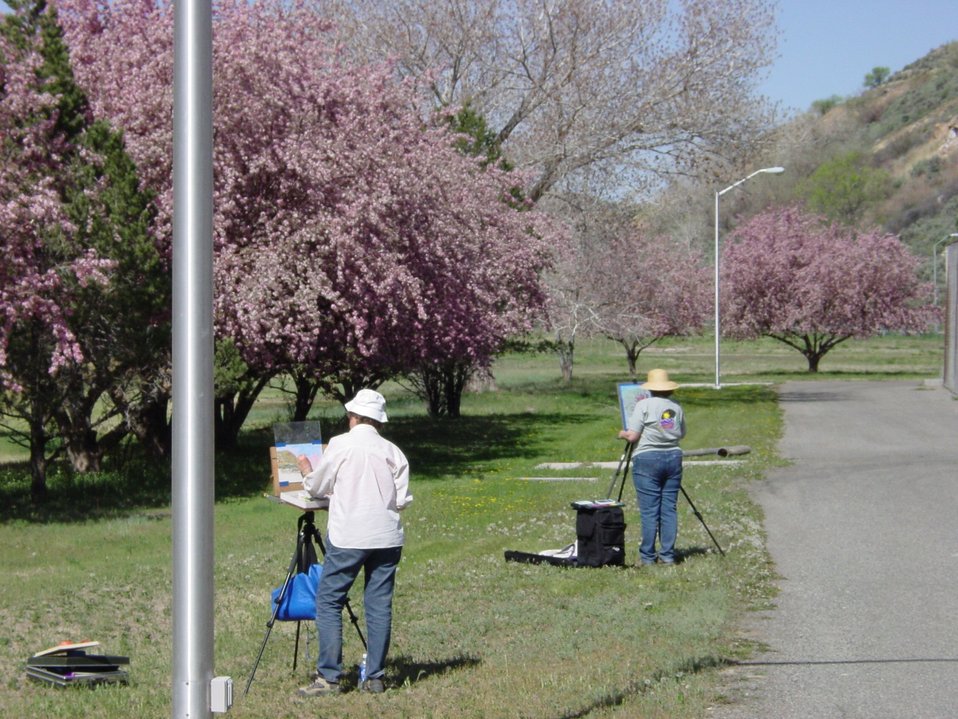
Drawing at Hotchkiss National Fish Hatchery

Students from the local adult art classes come out and work on their art projects at Hotchkiss National Fish Hatchery in Colorado. The ladies in this picture were working with pastels, drawing the crab apple trees in bloom.